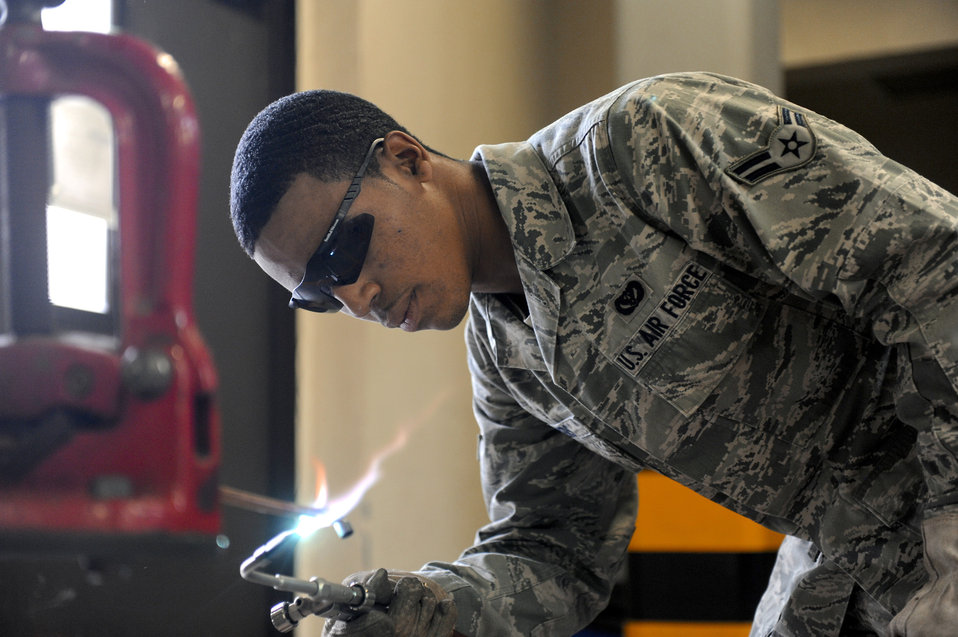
Air Force awards

Airman 1st Class Terence Myers brazes a copper bypass line that will be installed into a liquid chiller Jan. 10, 2010, at a Navy communications facility. Airman Myers is a member of the 18th Civil Engineer Squadron's Operations Flight, which was recently awarded the 2010 Major General Clifton D. Wright Award for flight members' outstanding accomplishments in 2010.